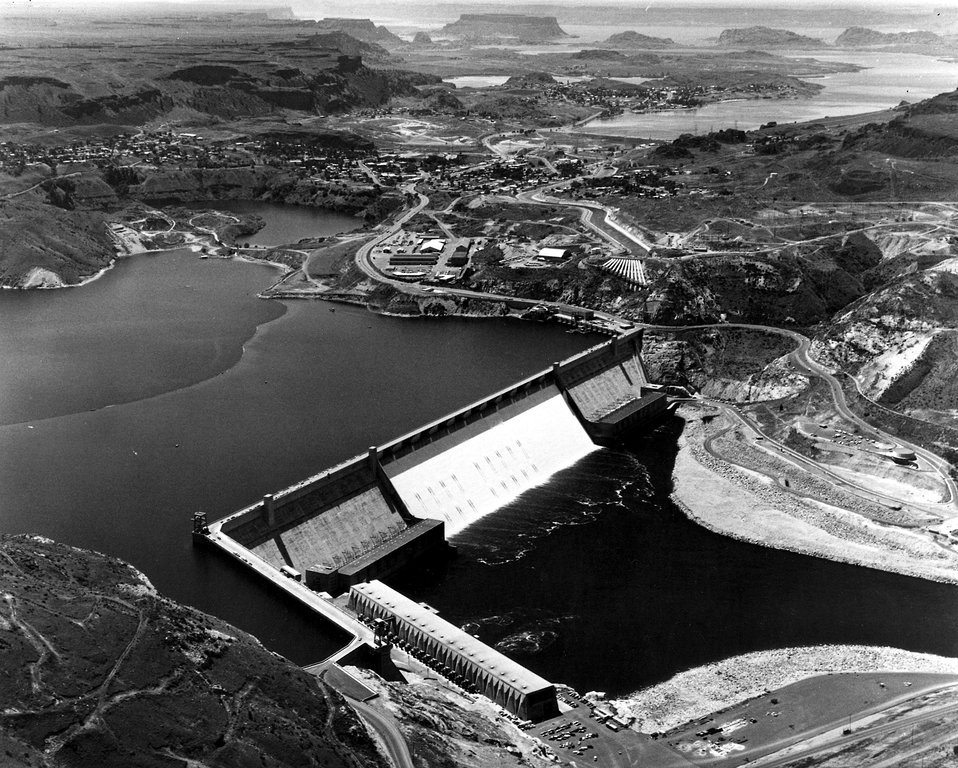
Grand Coulee Project Office, Washington. Aerial view looking south west with Grand Coulee Dam in the foreground and Steam Boat rock in the background. c. 1980